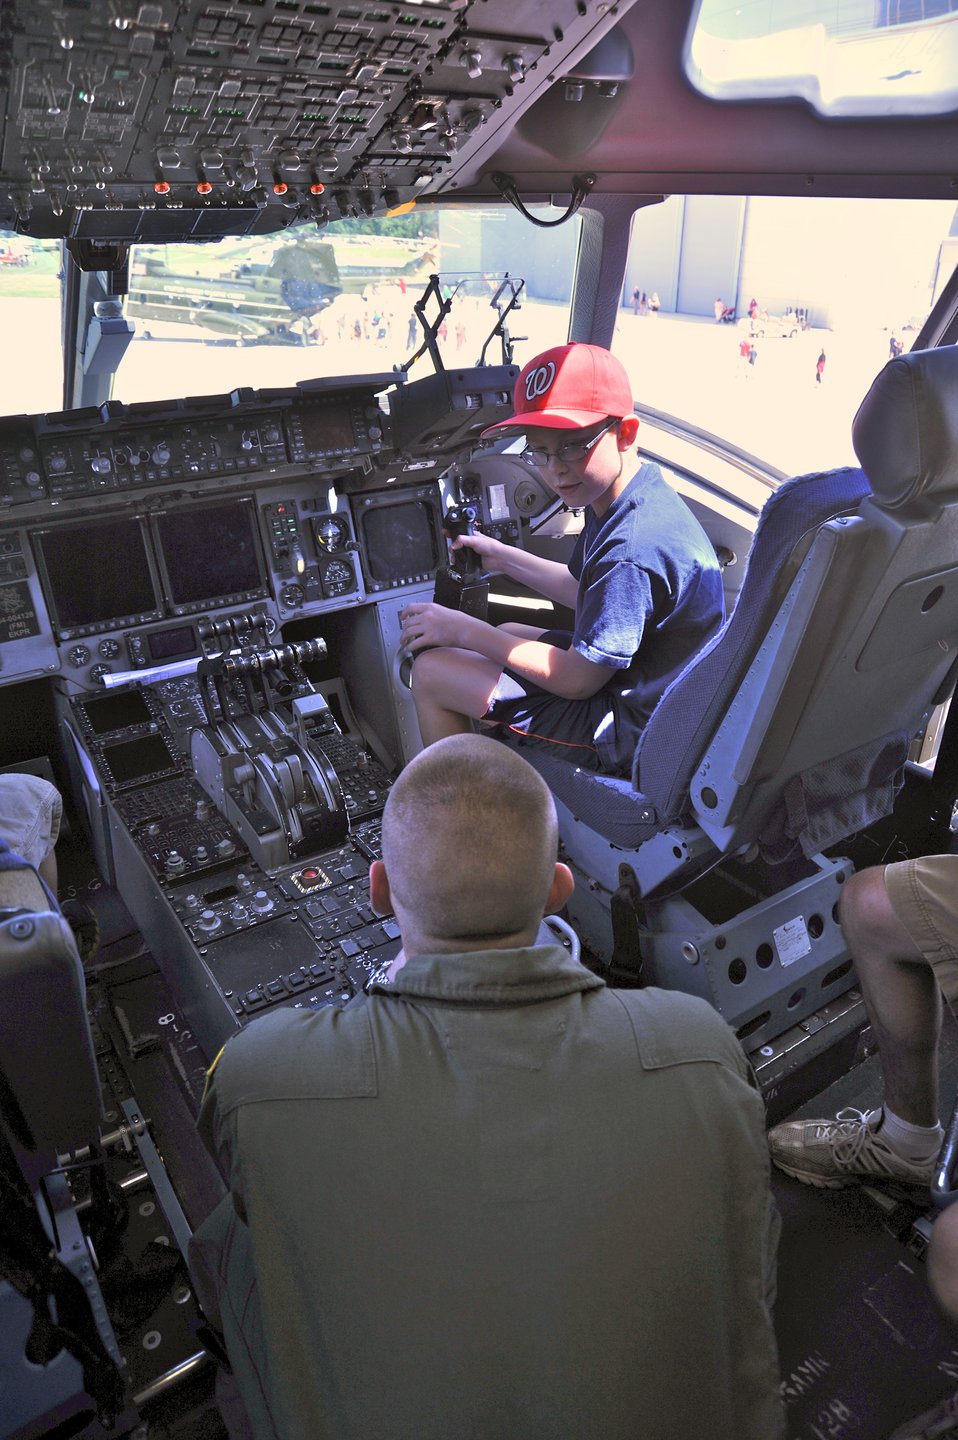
Everything under control

1st Lt. David Bishop, a pilot with the 305th Air Mobility Wing, answers questions about the controls of a C-17 Globemaster to Nicholas Kendall, 10, at